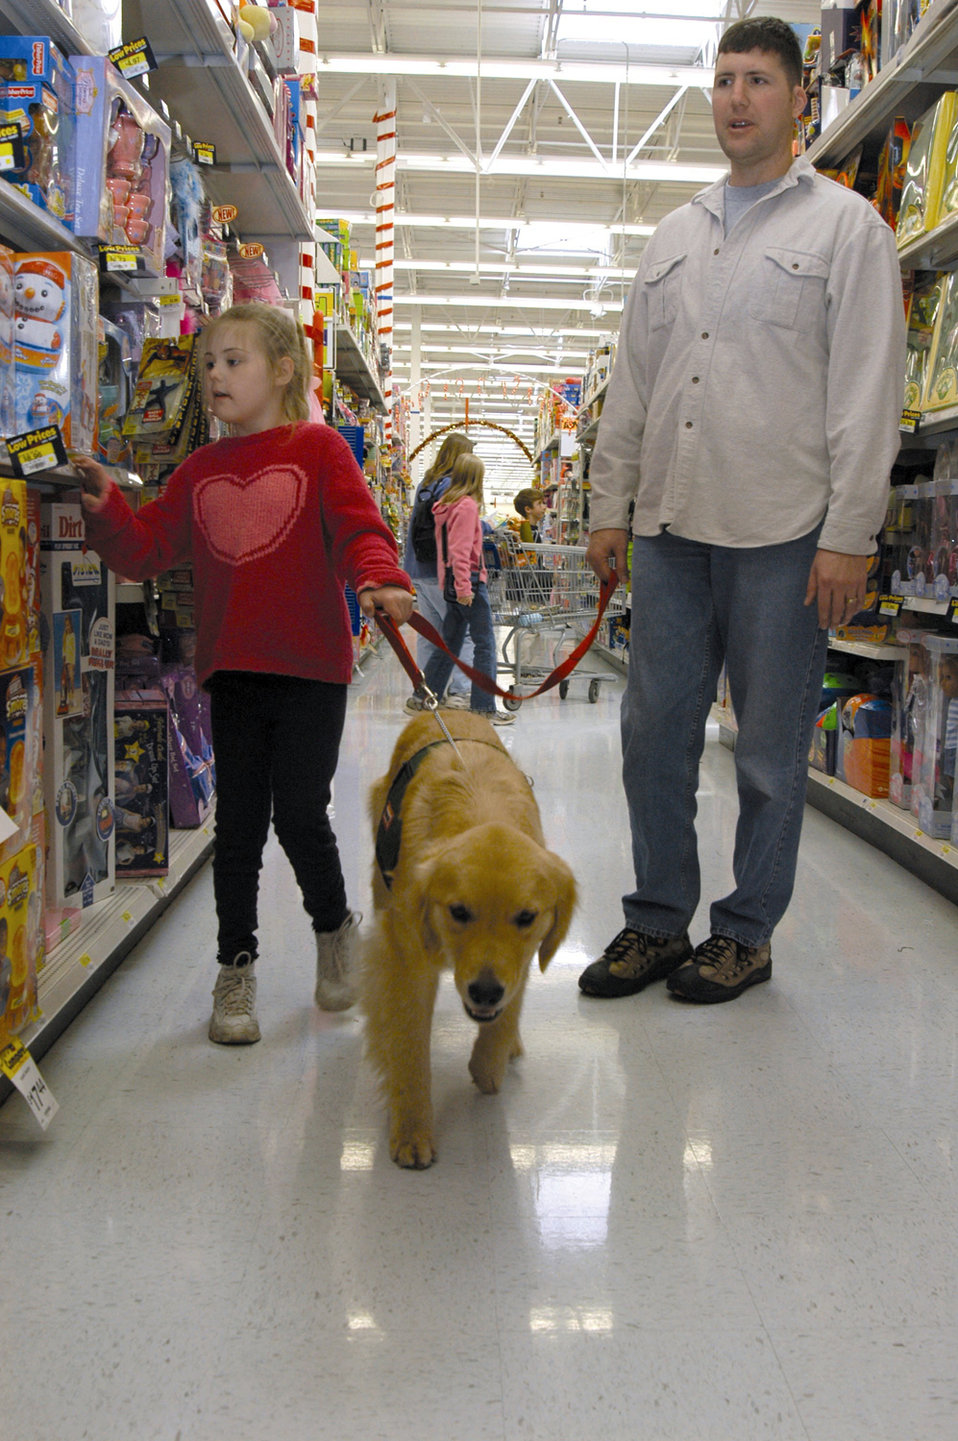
Golden retriever 'finds' girl to help

COLORADO SPRINGS, Colo. -- Jamie and her father, 1st Lt. Victor Rizzo walk through the toy aisle of a local department store with Berkley, a Canine Assistants service dog. The Rizzos were awarded a service dog for 7-year-old Jamie, who is socially developed at a 2-year-old level. Canine Assistants trains golden retrievers and Labrador retrievers to assist people with physical and mental disabilities. Lieutenant Rizzo is assigned to the 3rd Space Operations Squadron at nearby Schriever Air Force Base.